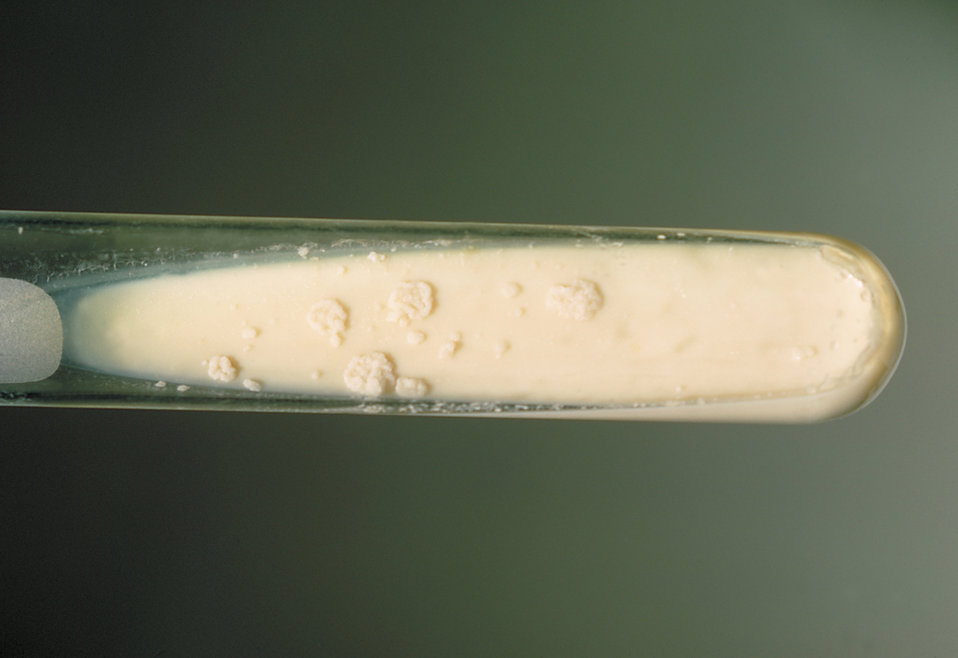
This is a Lowenstein-Jensen slant culture of the fungus Paracoccidioides brasiliensis grown at 37�C.